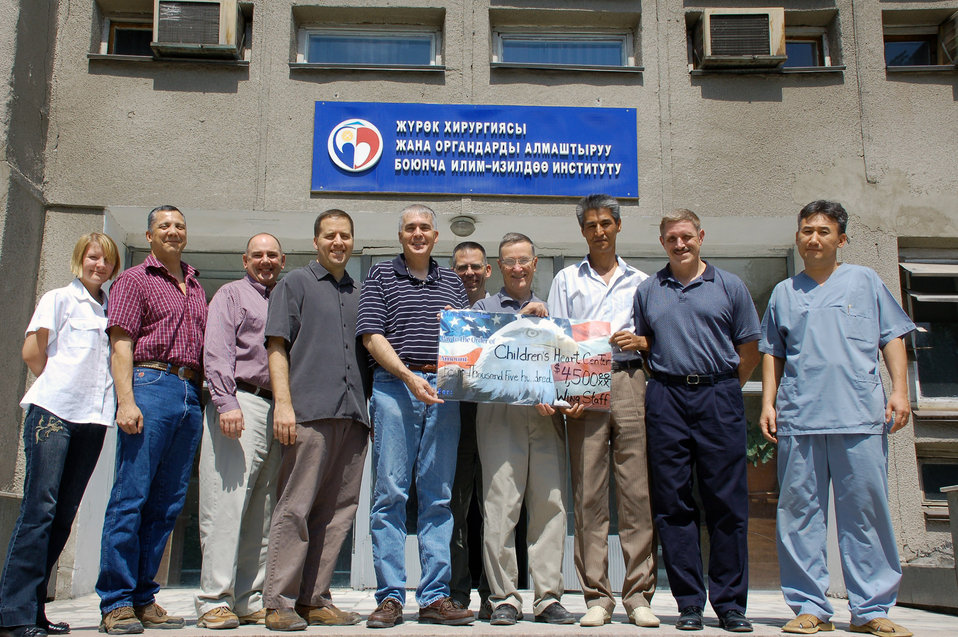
Airmen give from their hearts

Airmen from several 376th Air Expeditionary Wing staff agencies at Manas Air Base, Kyrgyzstan, present a check for $4,500 Aug. 18 to Dr. Shabyraliev Esenbekovich (right), senior cardiac surgeon at the Institution of Cardiac Surgery and Organ Transplantation in Bishkek, Kyrgyzstan. The donation was the largest single monetary contribution given by base Airmen to the institution, also known as the